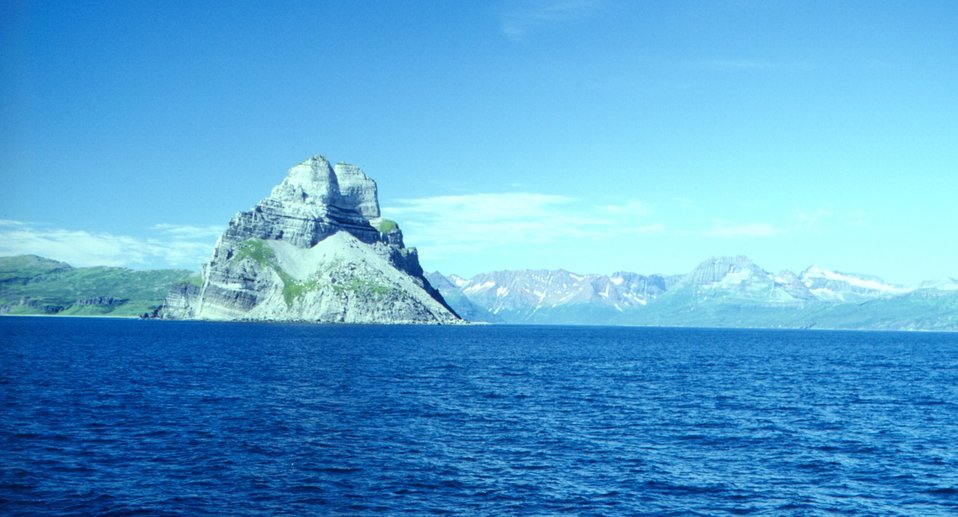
Castle Cape.